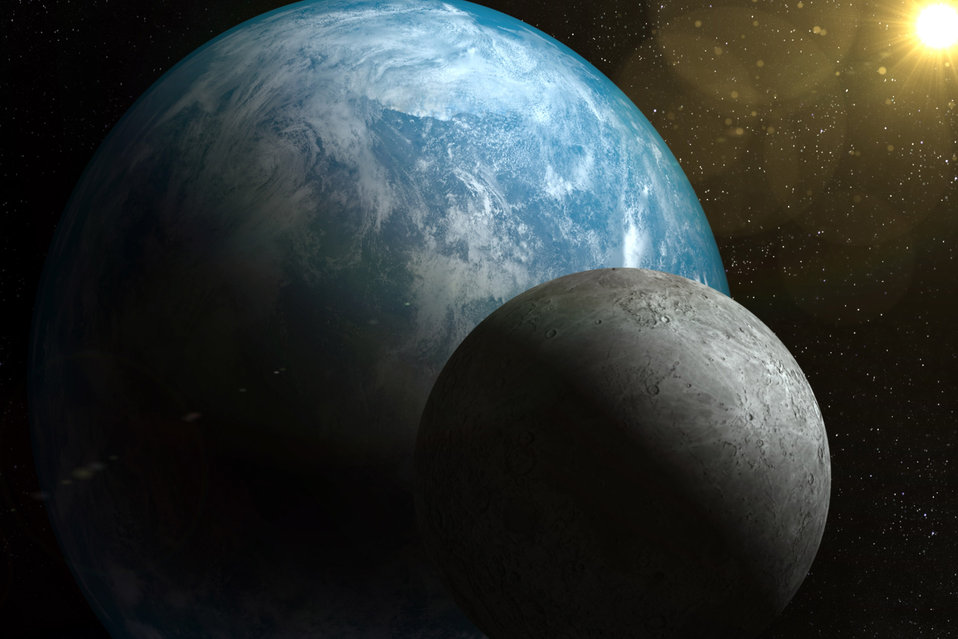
Zoom planet and moon

Our planet earth and the moon satellite view.